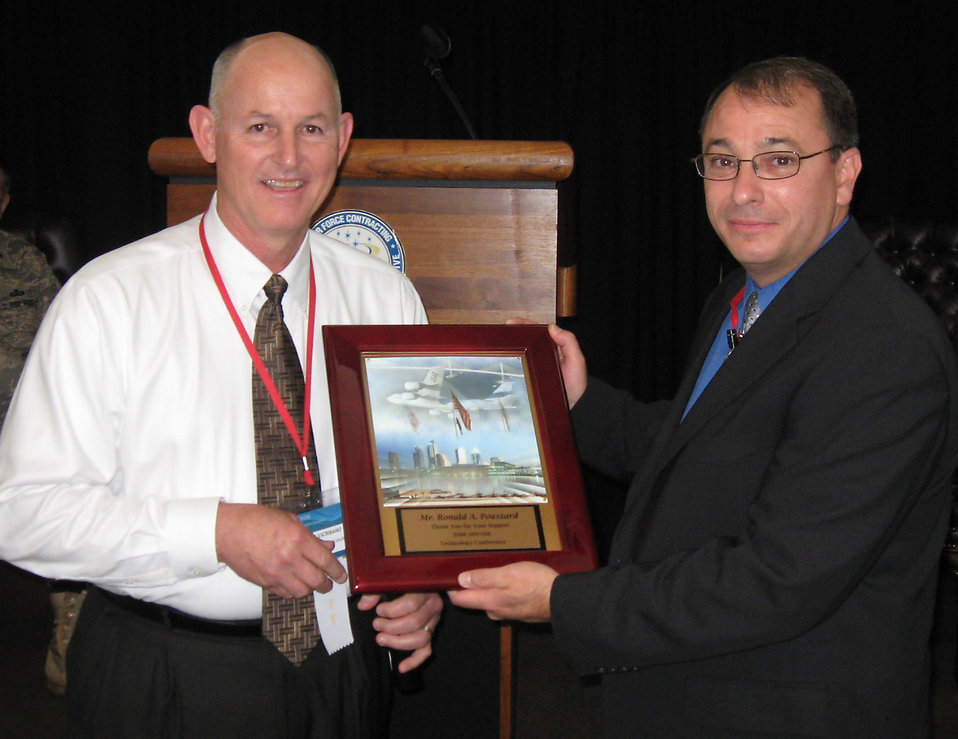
Service-disabled veteran-owned small businesses take Air Force

Ronald A. Poussard (right) receives a plaque from Nelson Escribano, at the 2008 Service-Disabled Veteran-Owned Small Business Technology Conference and Expo Nov. 13 at MacDill Air Force Base, Fla. Mr. Poussard is the director of the Secretary of the Air Force Small Business Programs. Mr. Escribano is a small business specialist for the 6th Air Mobility Wing at MacDill AFB.